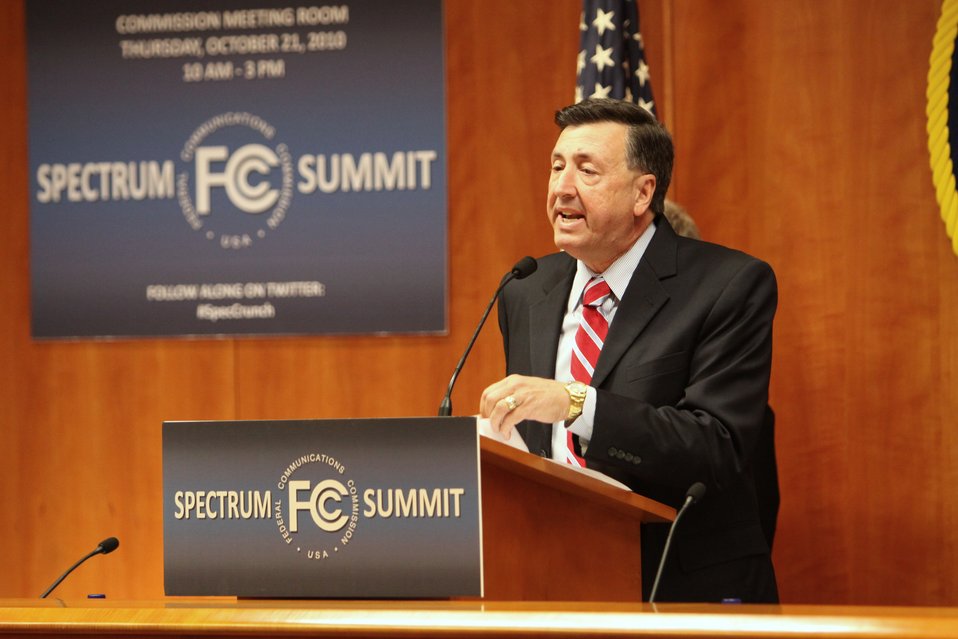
Julius Knapp, Chief of the Office of Engineering and Tech at the FCC, addresses the spectrum summit